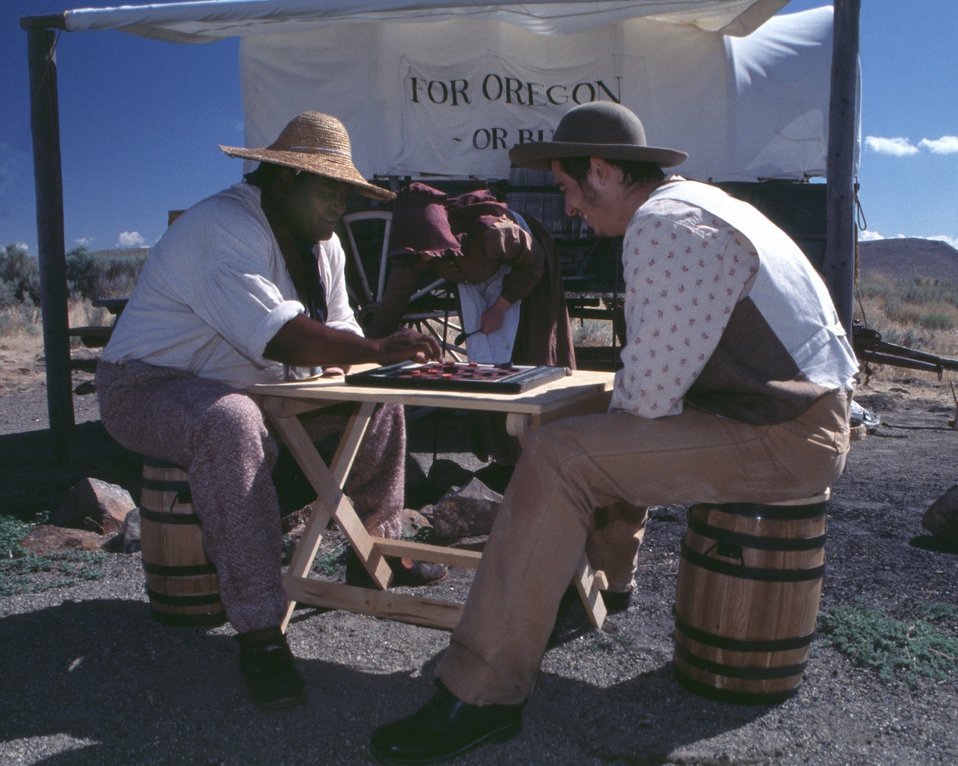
Dylan Prichertt, Rebecca Crow, and Brandon Kames portrqay oregon Trail Pioneers at a wagon encampment.